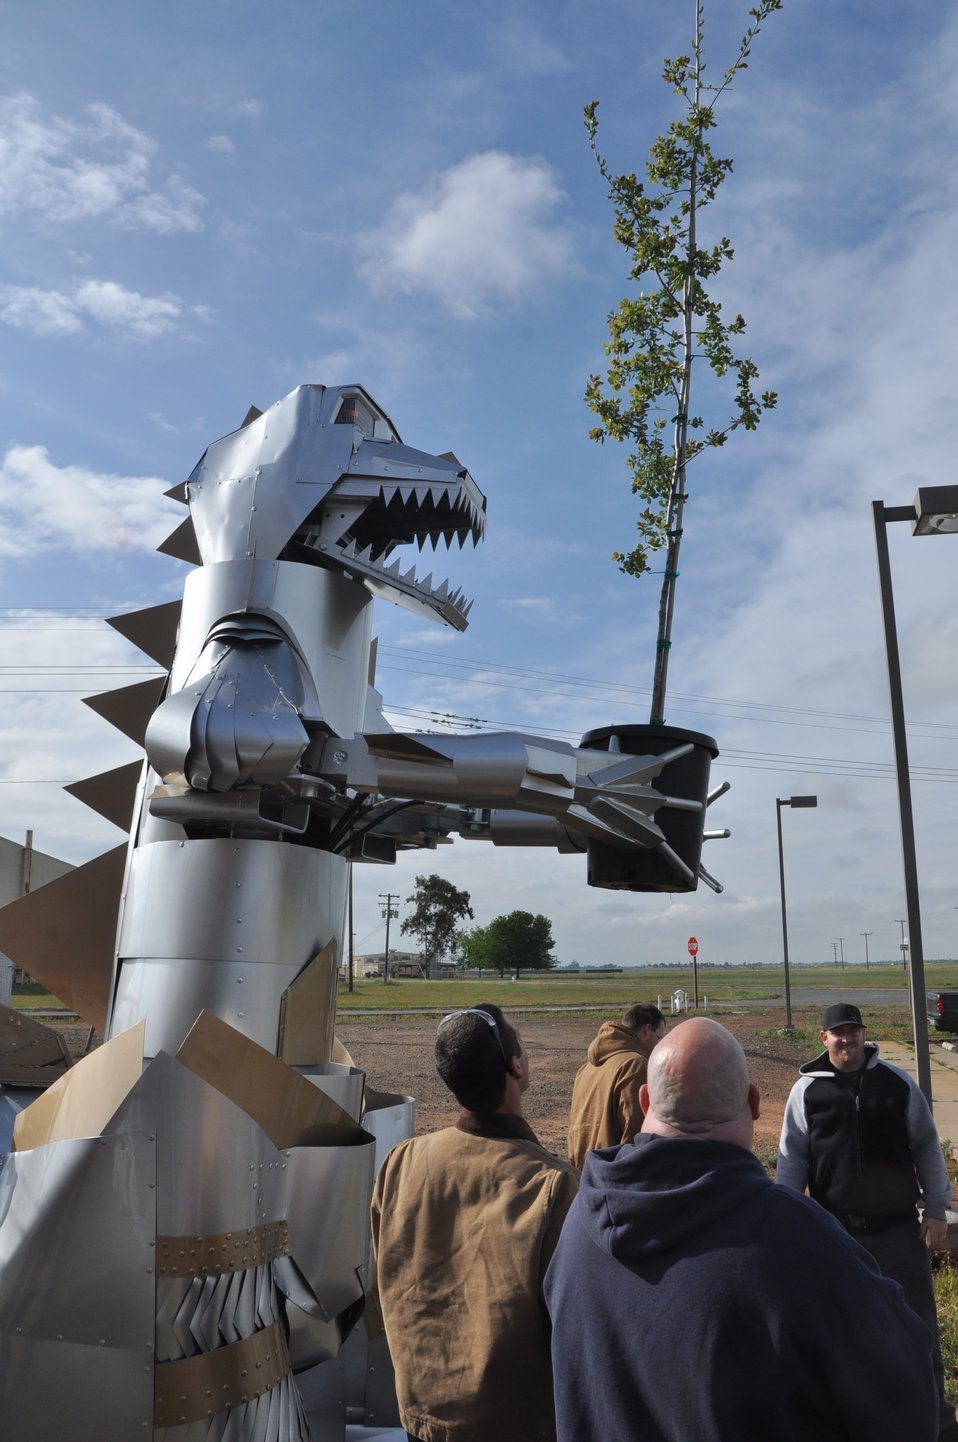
Air Force officals plant trees across America

DieselZilla, a robot built by students in the American River College clean
diesel program, helps plant a tree for Earth Day April 22, 2010, at the former Mather Air Force Base, in Sacramento, Calif.